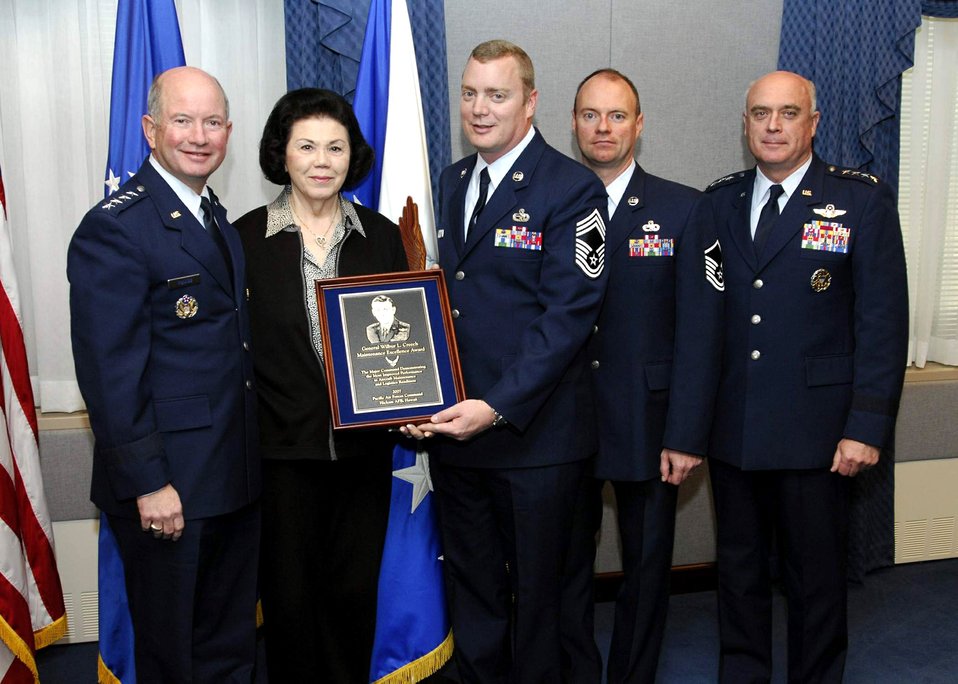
PACAF receives Air Force maintenance award

Vice Chief of Staff of the Air Force Gen. Duncan J. McNabb, Carol Creech, Chief Master Sgt. Robert L. Norcross II, Master Sgt. Jeffrey Soots and Pacific Air Forces Commander Gen. Howie Chandler pose with the Gen. Wilbur L. Creech Maintenance Excellence Award during a ceremony Jan. 16 at the Pentagon. Chief Norcross and Sergeant Soots accepted the award on behalf of the 10,000-plus maintainers and logisticians in Pacific Air Forces command. Mrs. Creech is the wife of the general, who passed away in 2003.